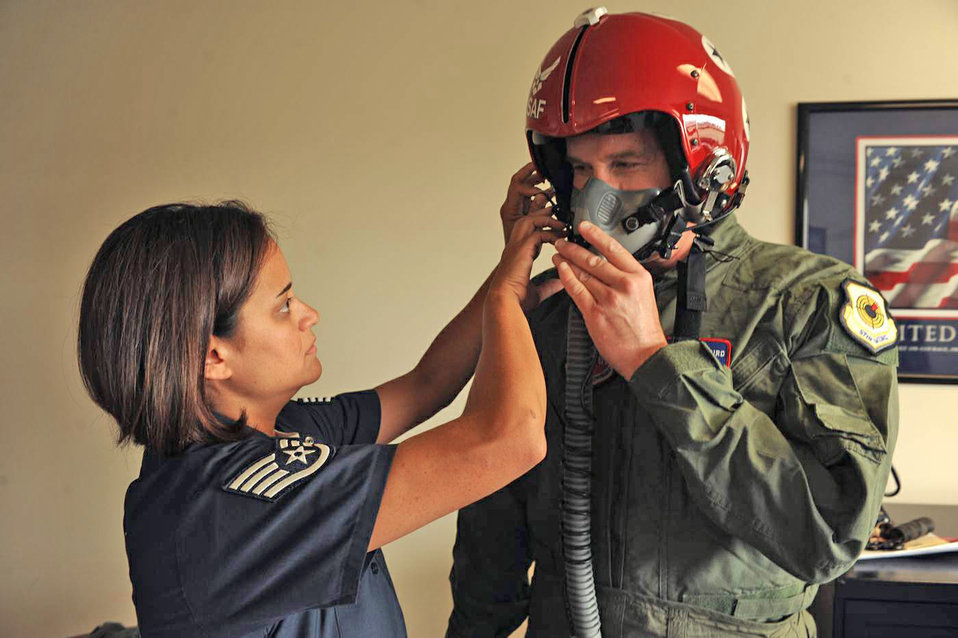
Hometown Hero Program

Staff Sgt. Robbin Bailon, aircrew flight equipment specialist, fits a helmet to Jeff Skiles prior to his flight with the Thunderbirds July 23. Mr. Skiles was the co-pilot for U.S. Airways Flight 1549 that crashed into the Hudson River in New York in January.